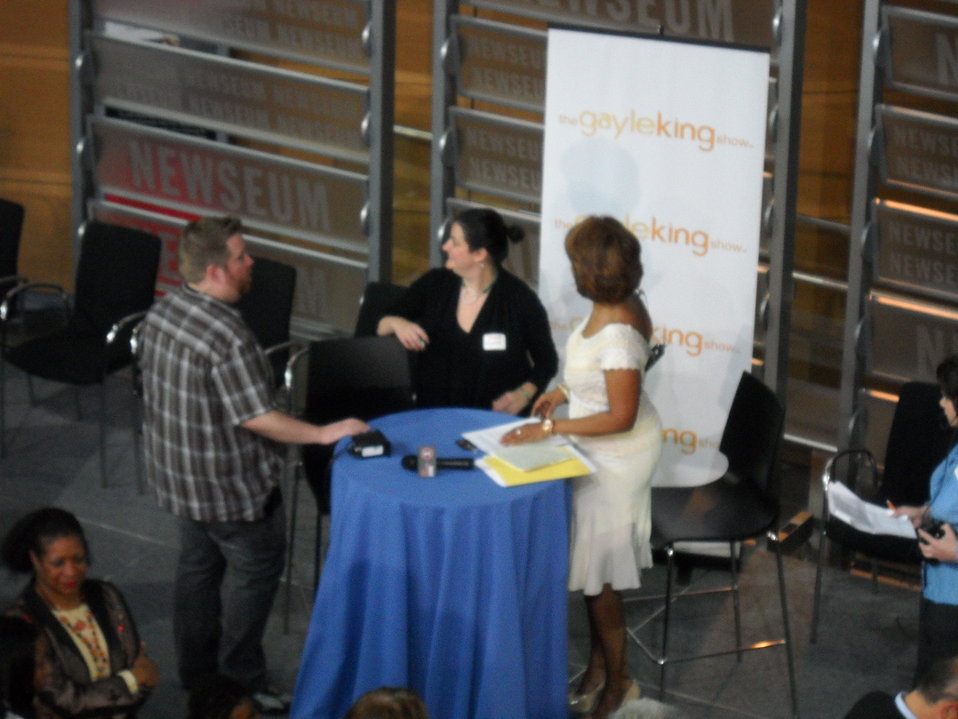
National No Phone Zone Day Newsum Washington, DC April 30, 2010 019